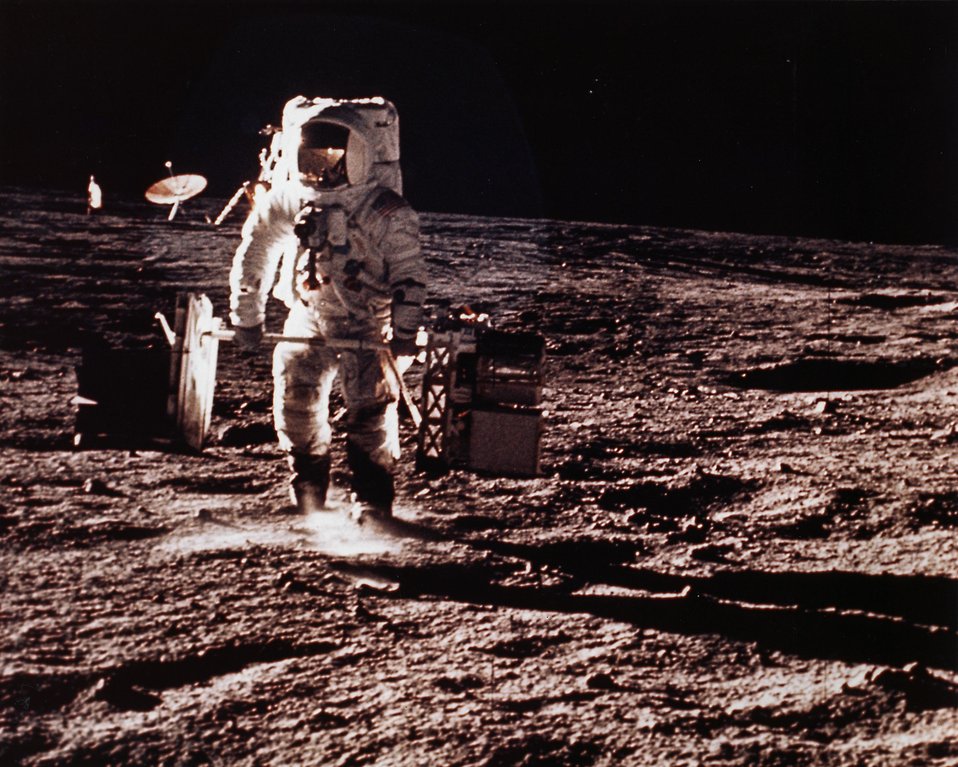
Nuclear electric power arrived on the moon for the first time on November 19, 1969, when the Apollo 12 astronauts -- Charles (Pete) Conrad and Alan Bean -- developed the AEC's SNAP-27 on the lunar surface to provide the power for the six experiments and the transmission data of the ALSEP (Apollo Lunar Surface Experiments Package). Circe 1970.